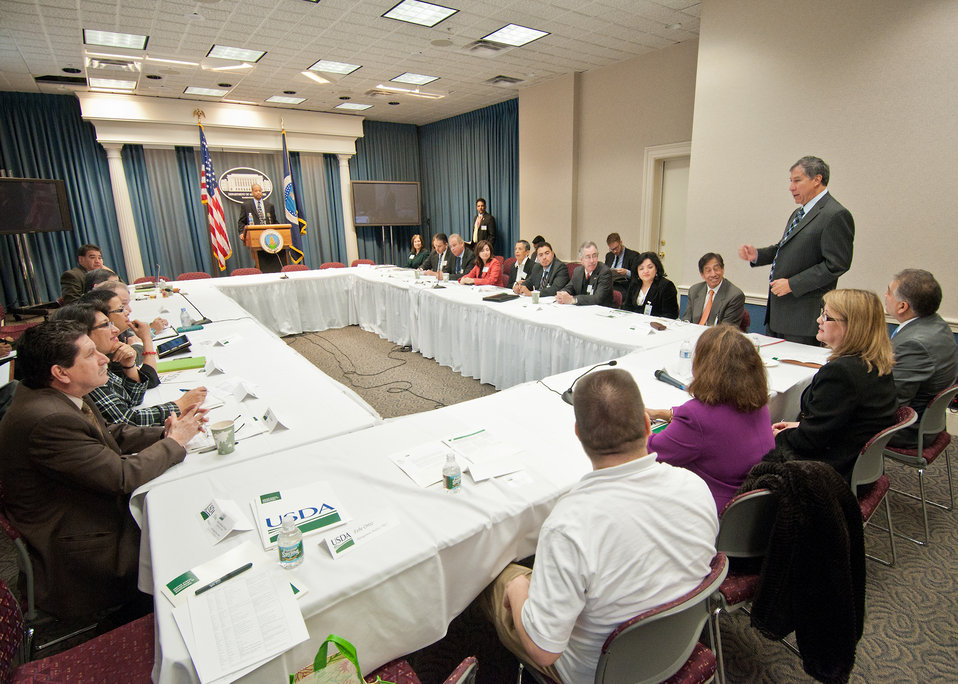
Ed Avalos, Undersecretary, Marketing and Regulatory Programs
speaks to participants at the United States Department of Agriculture Hispanic Roundtable at the United States Department of Agriculture, Monday, December 5, 2011 in Washington, DC. The roundtable focused on recruitment, retention and employee development for the purpose of developing the USDA Hispanic recruitment Plan. The roundtable hosted several national Hispanic partners and recognized USDA Hispanic organizations and associations.